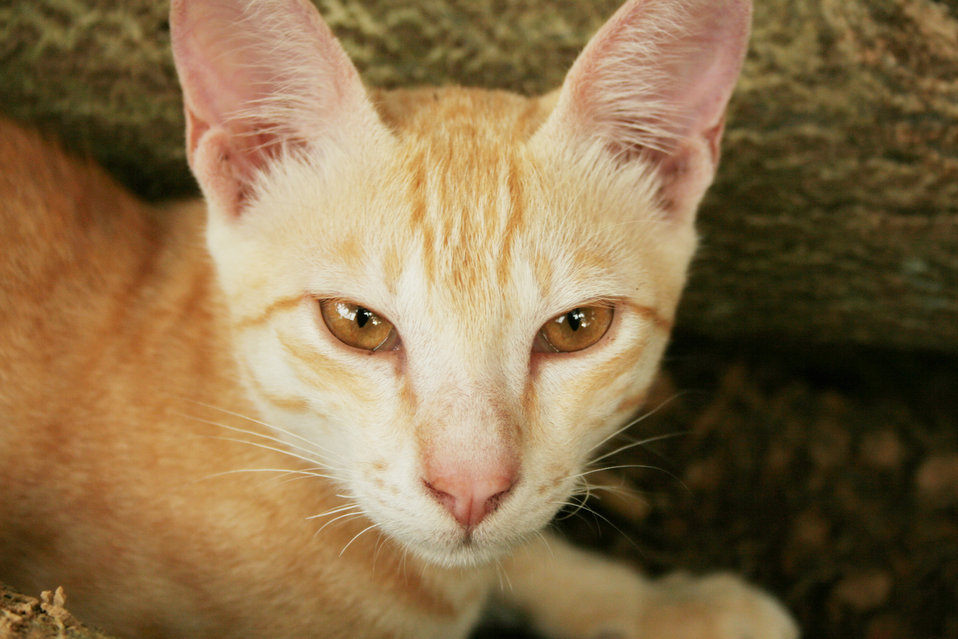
This work is dedicated to Public Domain